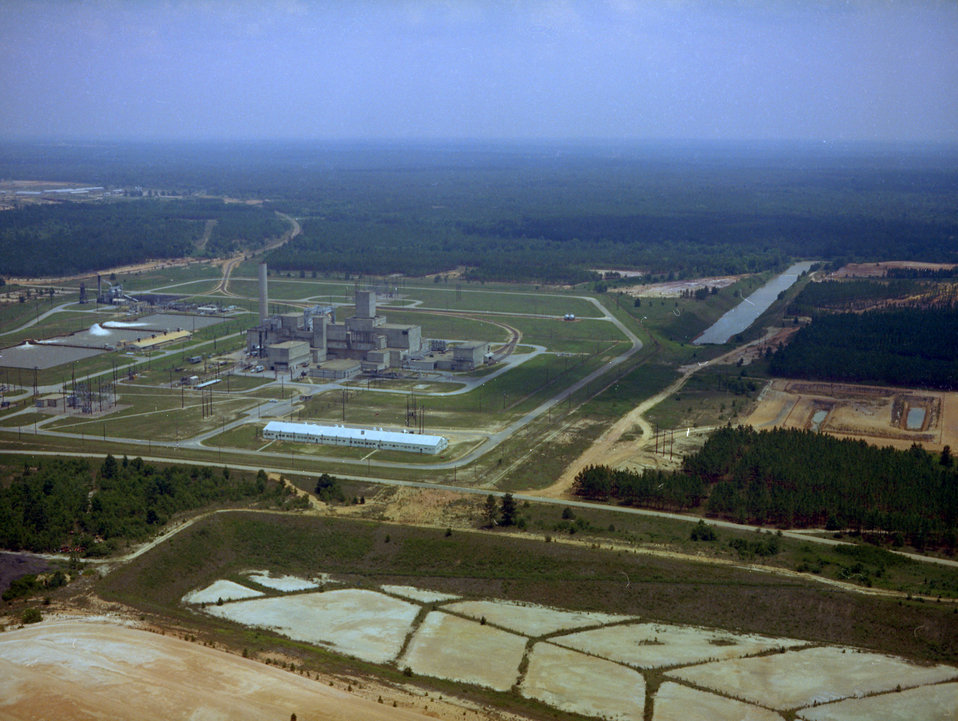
Workers Clean Up C Area as Added Value from Recovery Act P and R Reactor Projects

An aerial view of the C Area in 1969.